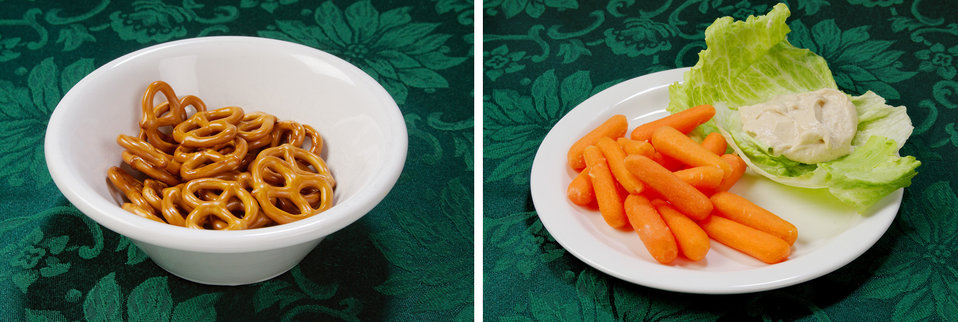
This image tells a story. Its theme is you can make the healthier choice when deciding on a meal. On the left is a bowl containing 1.5 ounces of pretzels, equaling 162 calories. On the right is a plate of 16 baby carrots, and an accompanying tablespoon of hummus atop a piece of iceberg lettuce, equaling 75 calories.